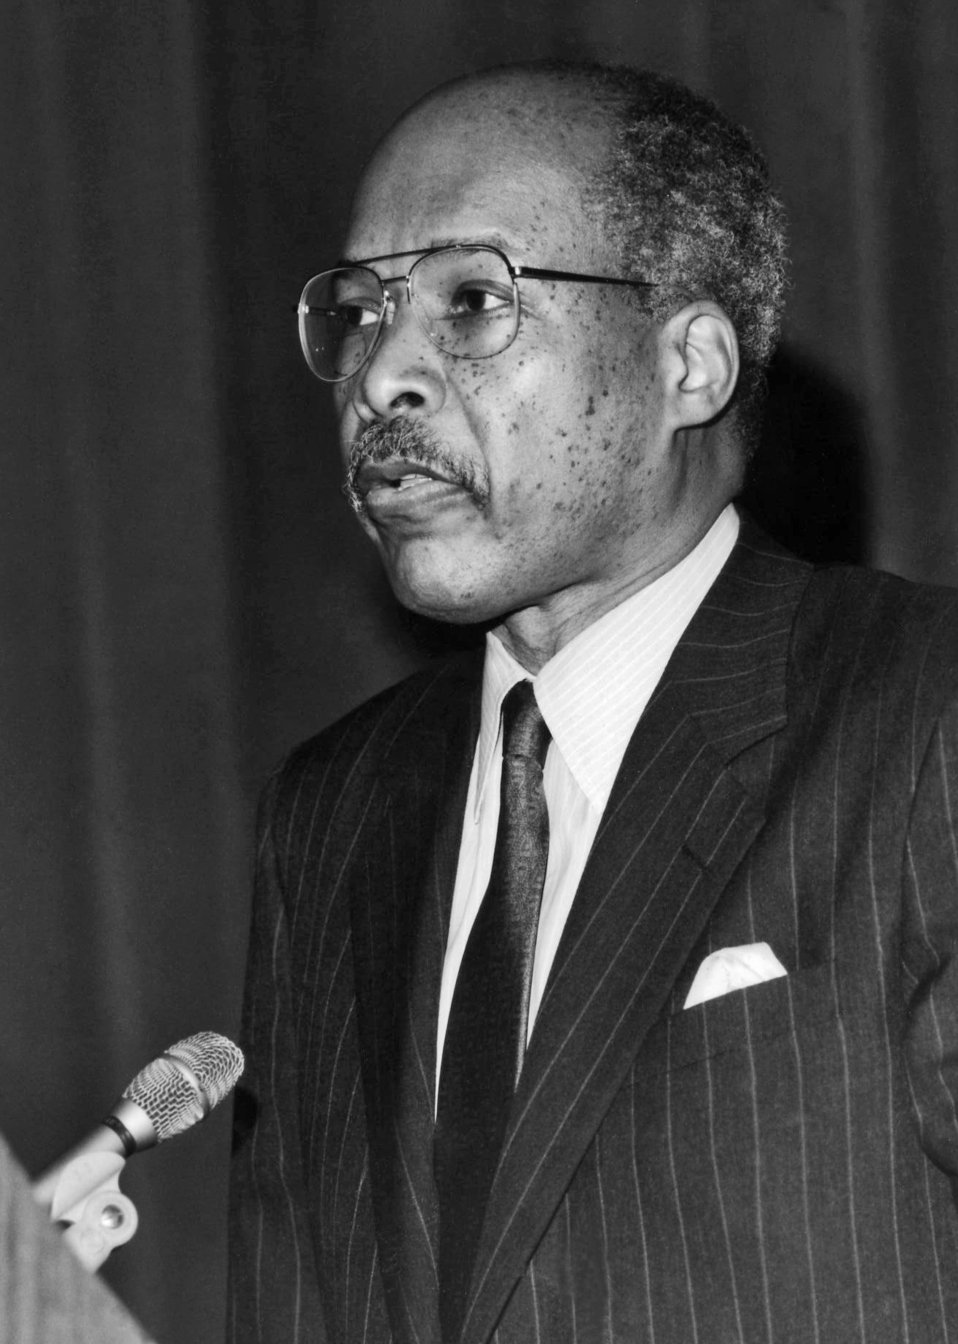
This was Dr. Louis W. Sullivan, the newly appointed Health and Human Services Secretary (1989 - 1993), shown here as he was addressing personnel at a CDC event in May, 1989.